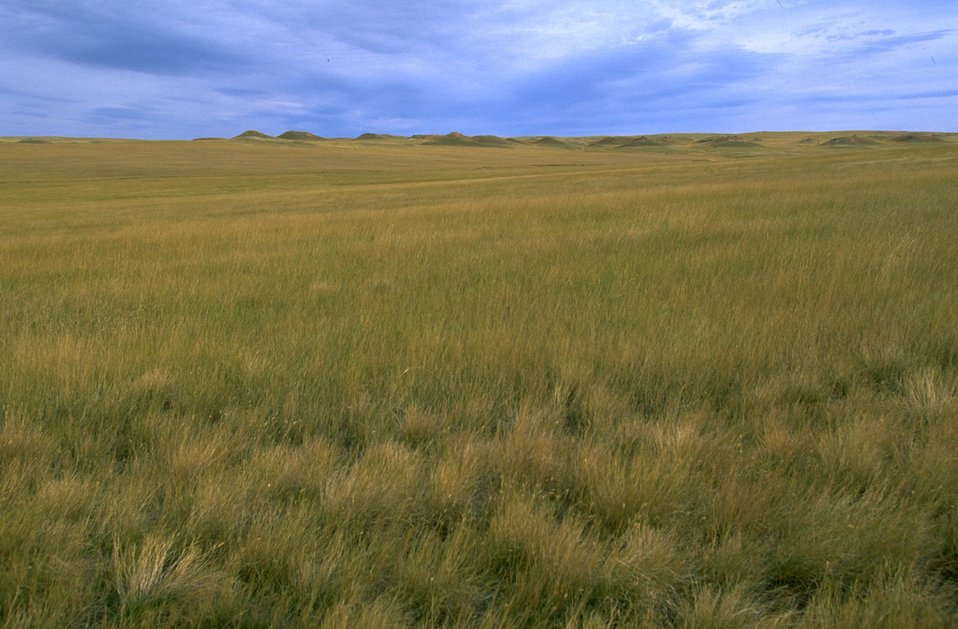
Eastern Montana prairie